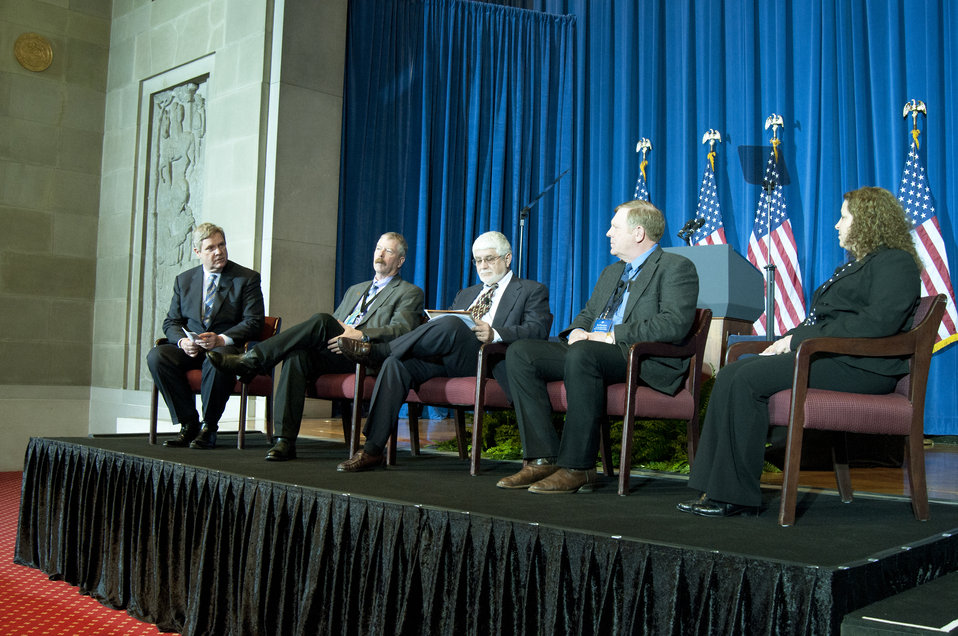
(L to R) Agriculture Secretary Tom Vilsack, Wyoming Wildlife and Natural Resources Trust (WY) –Sage Grouse conservation rancher Bob Budd, Longleaf Pine Alliance (AL) –Long Leaf Pine Conservation representative Rhett Johnson, from Daybreak Ranch in Hyde County South Dakota rancher Jim Faulstich, and Sustainable Northwest (OR) – Community-based forestry-Forest restoration representative Maia Enzer participated on the “Conserving Rural Lands: New Models for Working Lands and Wildlife” panel during a White House Conservation Conference, “Growing America’s Outdoor Heritage and Economy” at the Interior Department, Yates Auditorium in Washington, D.C. on Friday, March 2, 2012 The conference was part of President Barrack Obama’s, “America’s Great Outdoors Initiative” to spotlight community-driven conservation efforts and discussed how to build their success.